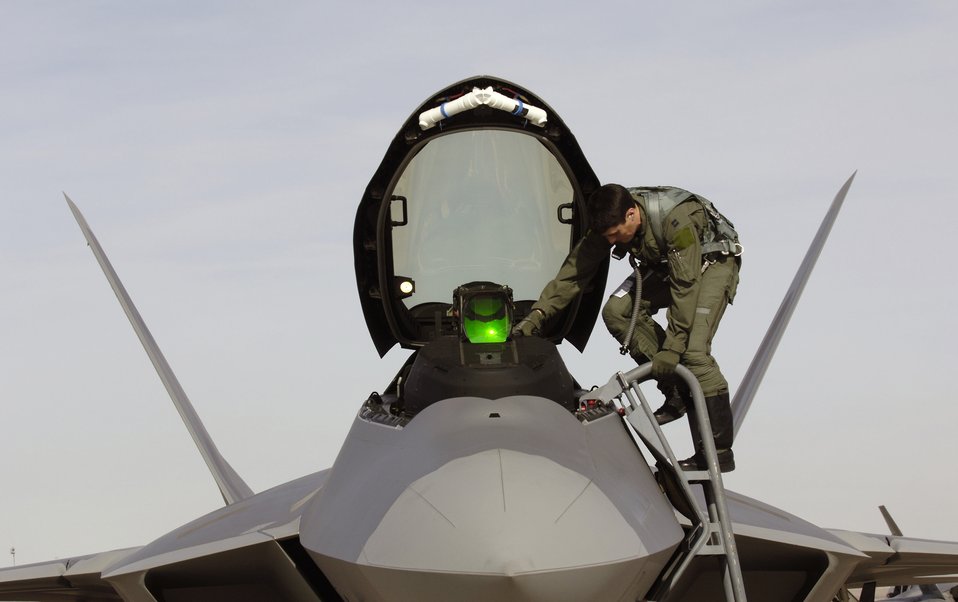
Raptors invade Nevada

Capt. Raymond Thaler exits an F-22 Raptor after a sortie during Red Flag 07-02 Feb. 6 at Nellis Air Force Base, Nev. Red Flag sharpens aircrews' warfighting skills in realistic combat situations. The F-22s will be flying missions during the day and night to the nearby Nevada Test and Training Range where they will simulate an air war. The Air Force and Navy, along with military forces from Australia and the United Kingdom, are participating in Red Flag. Captain Thaler is an F-22 pilot with the 94th Fighter Squadron at Langley Air Force Base, Va. This is the first deployment to Red Flag for the 94th FS with the F-22.